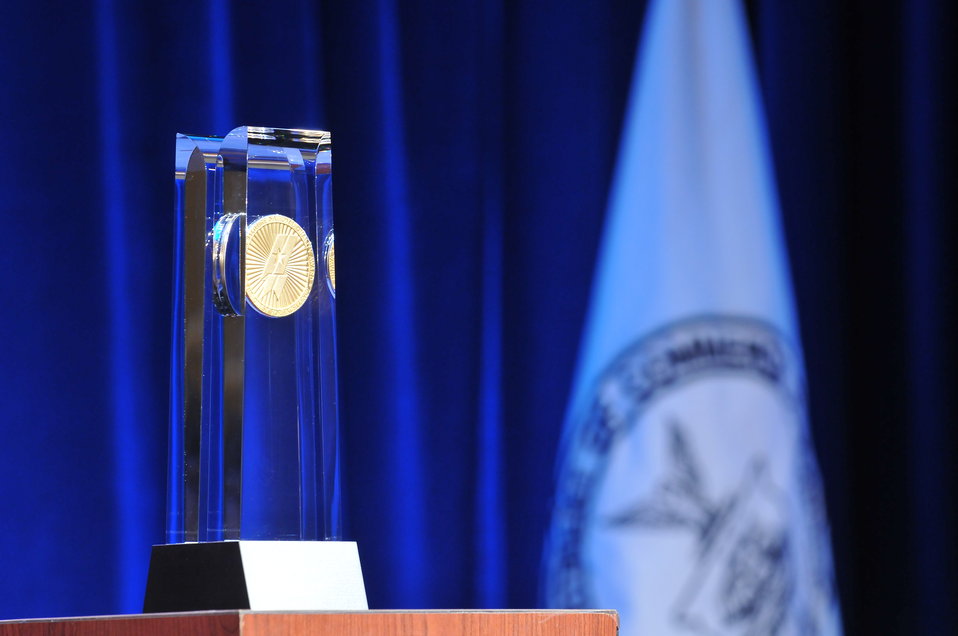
Baldrige Award Crystal, 2013 Baldrige Award Ceremony, April 6, 2014

Baldrige Award crystal with Dept. of Commerce flag in background; 2013 Baldrige Award Ceremony; April 6, 2014